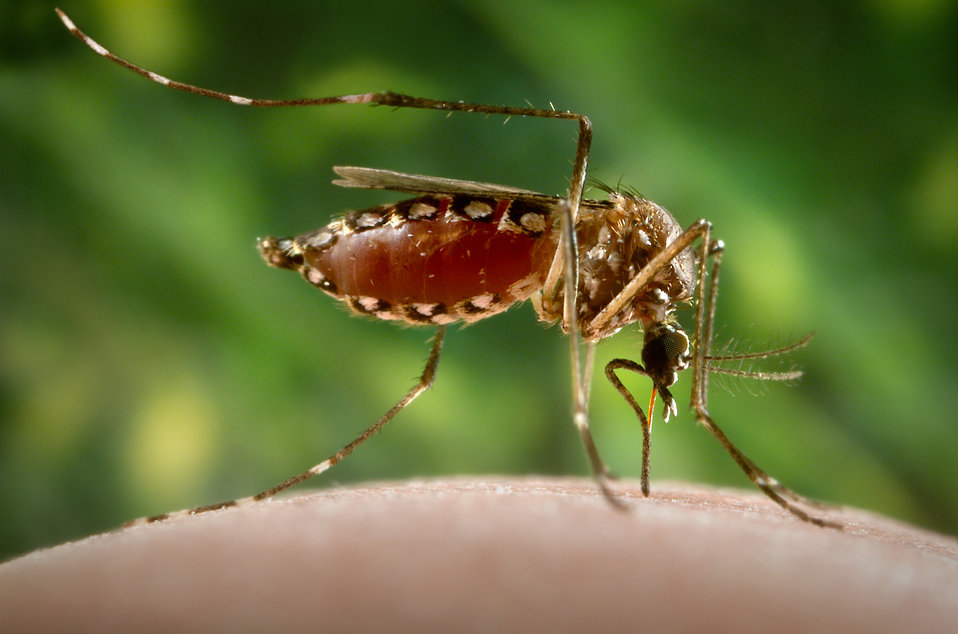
This 2006 photograph depicted a female Aedes aegypti mosquito as she was in the process of acquiring a blood meal from its human host, after having penetrated the skin surface with the sharply-pointed "fascicle". Normally, this female would be obtaining her blood from an unsuspecting host, but in this case, the CDC's biomedical photographer, James Gathany, had volunteered his own hand in order to entice the insect to alight, and feed. Note that her abdomen had become distended as her stomach was filling with her blood meal, and how the proboscis' labial sheath was in its retracted, pulled back configuration, exposing the inserted, sharp fascicle, which had turned red, as the blood was passing up the straw-like apparatus.